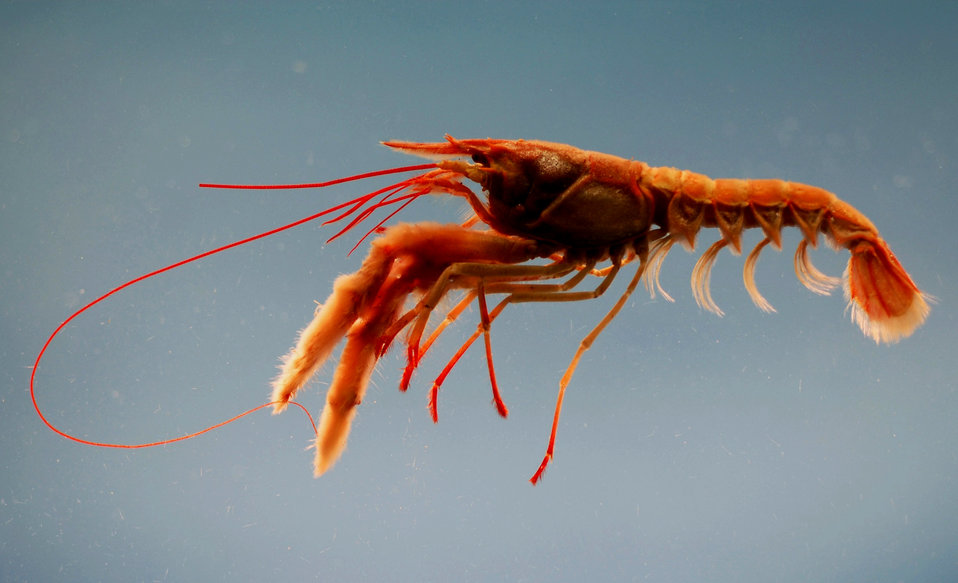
Rosy lobsterette (Nephropsis rosea)